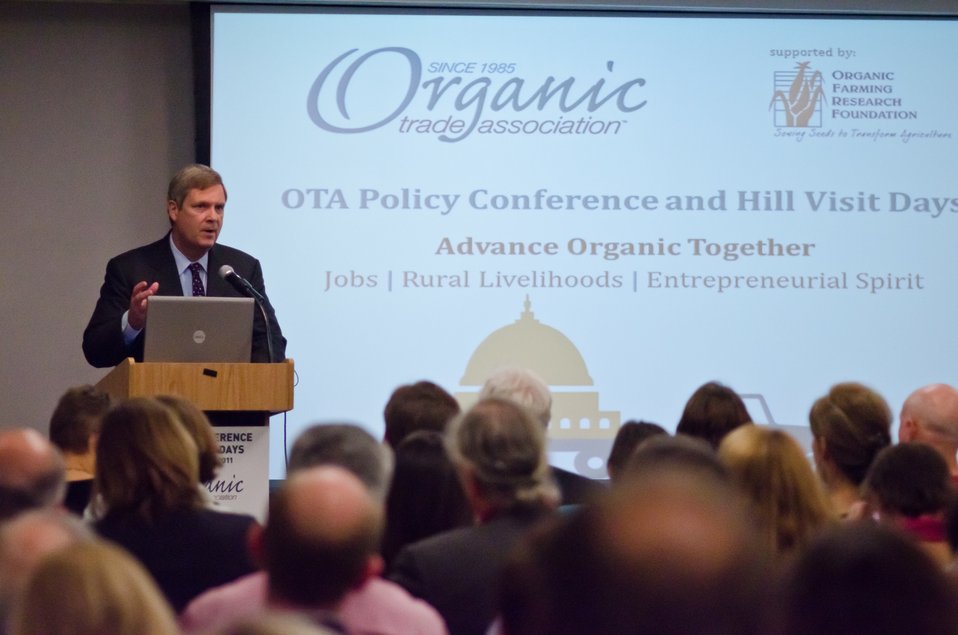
U.S. Department of Agriculture Secretary Tom Vilsack spoke and took questions at the Organic Trade Association???s, sold out 2011 Policy Conference and Hill Visit Days on Wednesday, April 6, 2011 in Washington, DC.